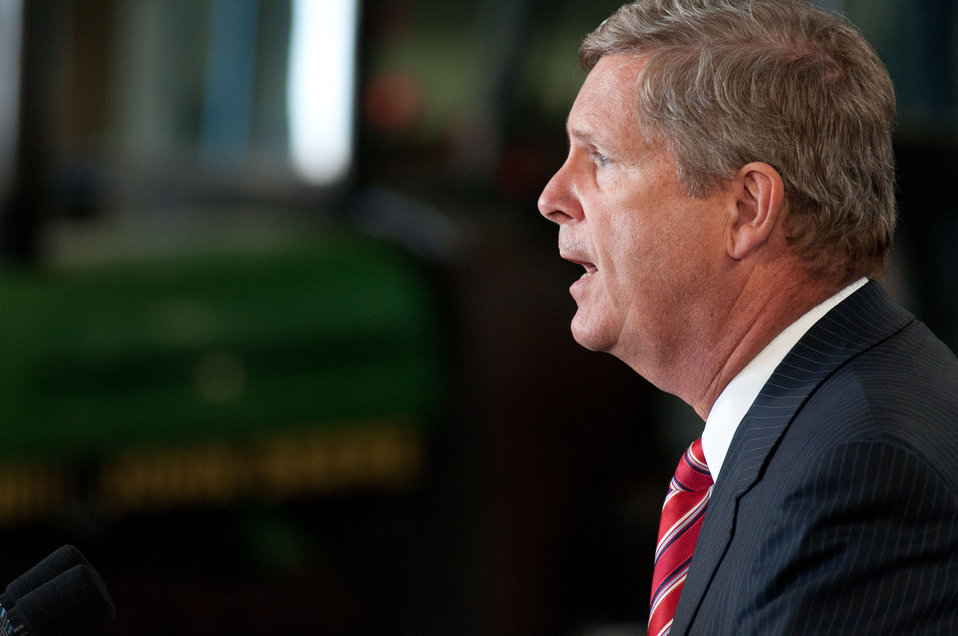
Agriculture Secretary Tom Vilsack introduces President Barack Obama at the Northeast Iowa Community College, for a White House Rural Economic Forum on Tuesday, August 16, 2011. The President’s visit would focus on agriculture’s contribution to the national economy, and how to create more jobs in rural America.